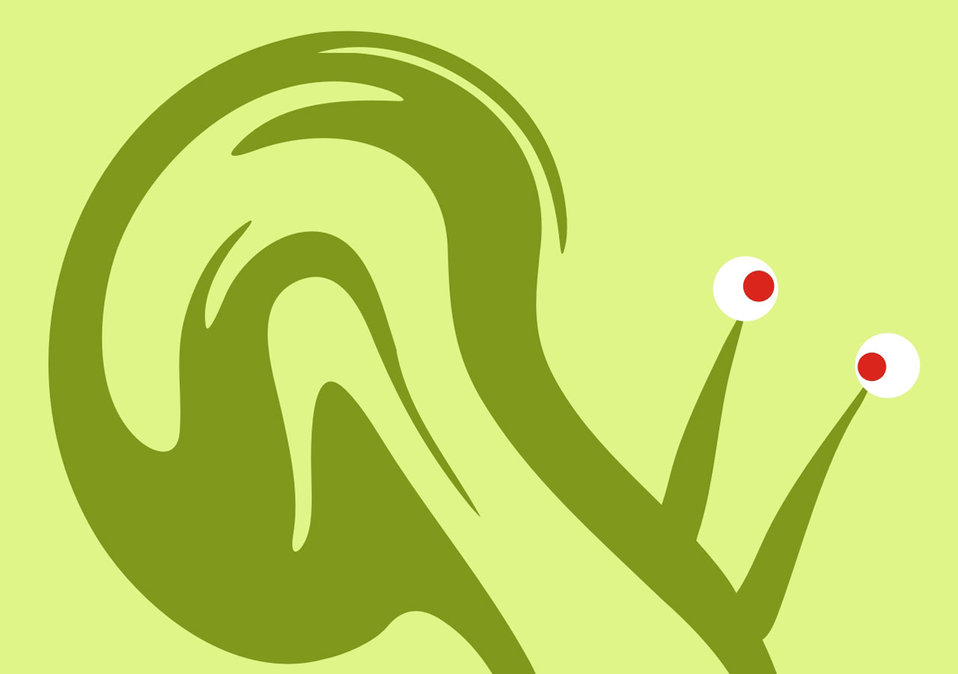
Crazy snail background

Red-eyed snail on a green background.